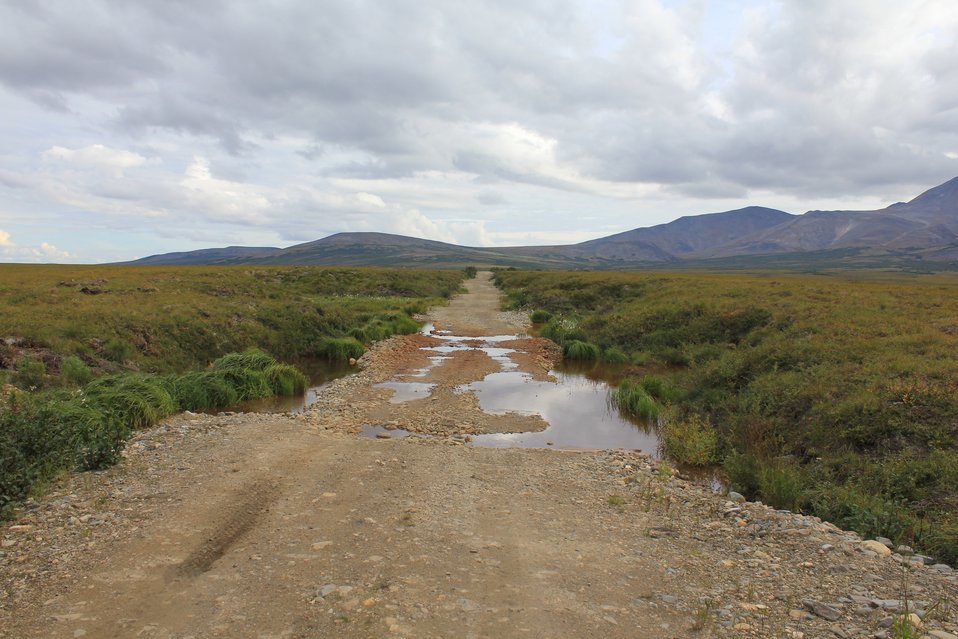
An example of thermo-karst topography caused by the melting of permafrost causing the road to drop. In this instance the relative elevation change is approximately 10 feet.